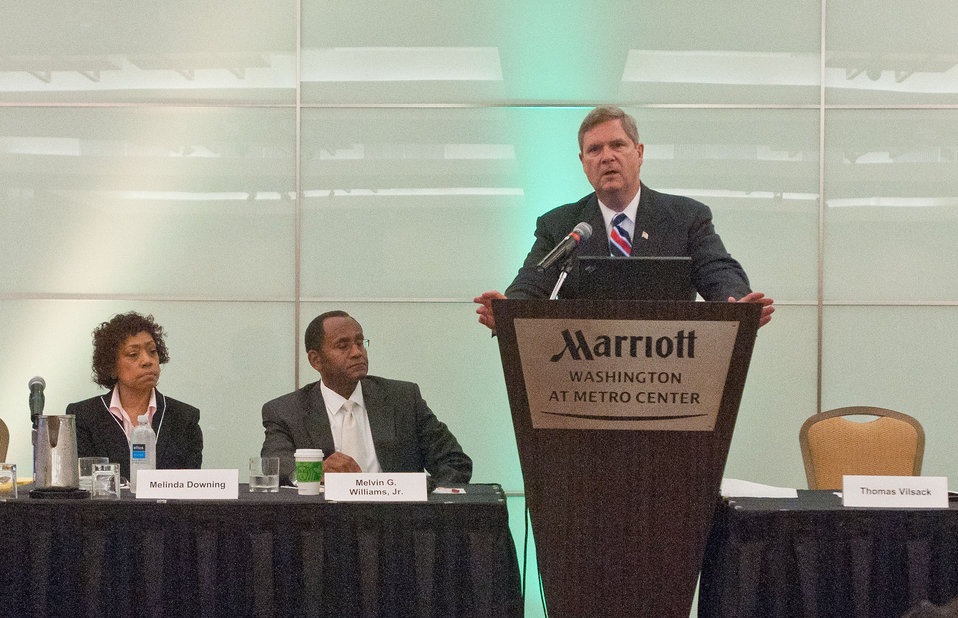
The Departments of Energy, Agriculture, Interior, the Environmental Protection Agency, the National Small Town Alliance, the Howard University School of Law and other partners held the State of Environmental Justice in America 2011 Conference in Washington, D.C., May 27-29, 2011. The year’s theme was 'Building the Clean Energy Economy with Equity.' The focus is on climate change, green jobs and equity for low-income, minority and Tribal populations. Agriculture Secretary Tom Vilsack was the keynote speaker at the Minority Alternative and Renewable Energy Consortium Forum on Thursday, Apr, 28, 2011 in Washington, DC.